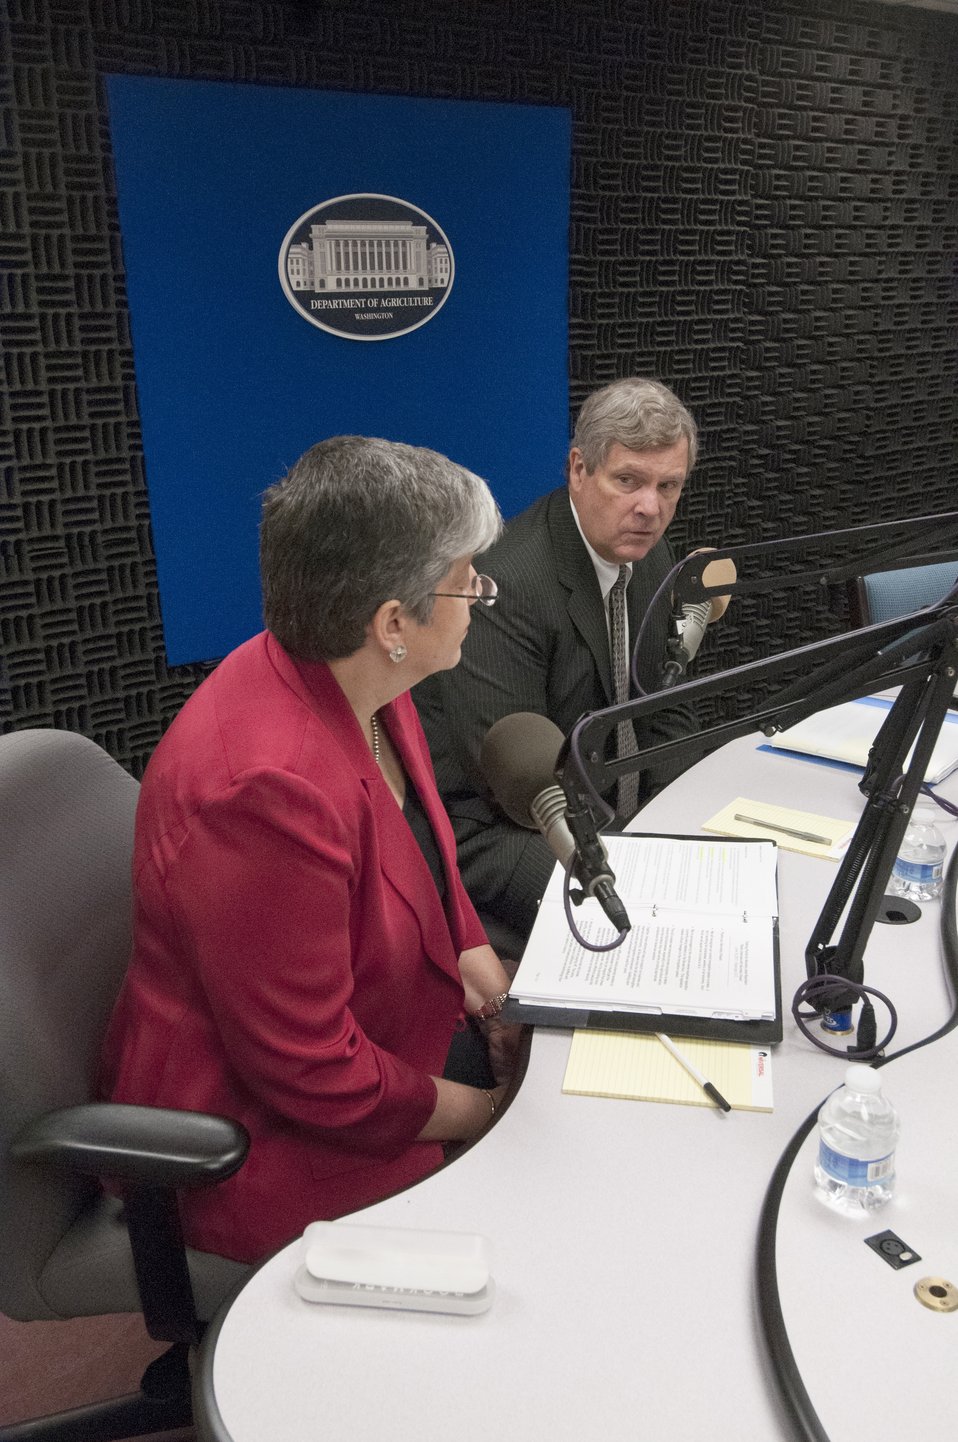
Agriculture Secretary Tom Vilsack and Homeland Security Secretary Janet Napolitano host a national media call to discuss the importance of comprehensive immigration reform at the U.S. Department of Agriculture on Tuesday, Jun. 18, 2013.